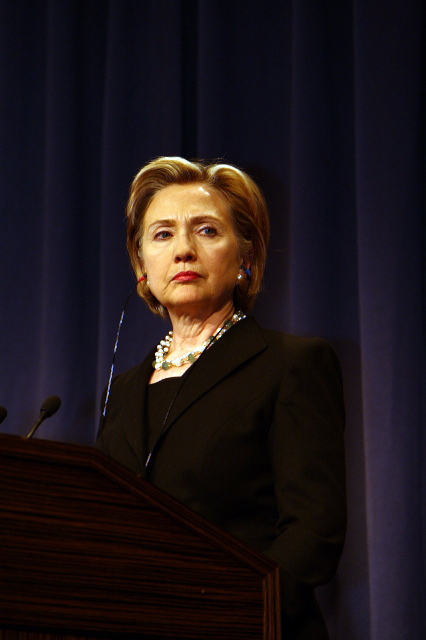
Press Conference With Russian Foreign Minister

Press conference after dinner meeting between U.S. Secretary of State Hillary Rodham Clinton and Russian Foreign Minister Sergey Lavrov in Geneva, Switzerland March 6, 2009.